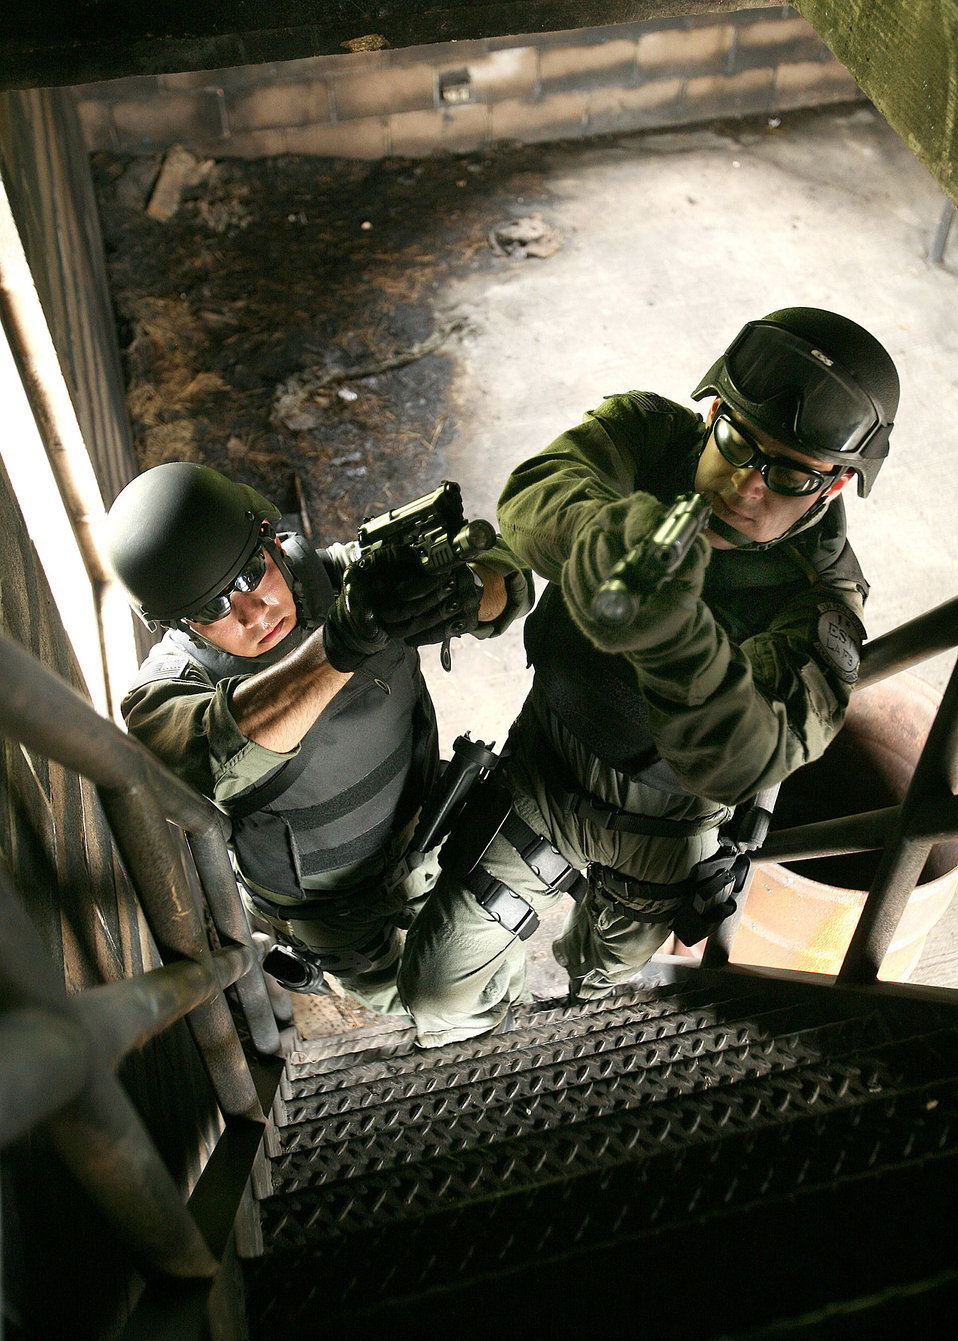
Go ahead, make my day

Staff Sgt. Bryan Garcia (left) and Master Sgt. Ronald Thompson cover each other during a training session May 4 at Lackland Air Force Base, Texas. They are members of the 37th Training Wing's Emergency Services Team and recently competed in the Southeast Texas SWAT competition, taking first place.